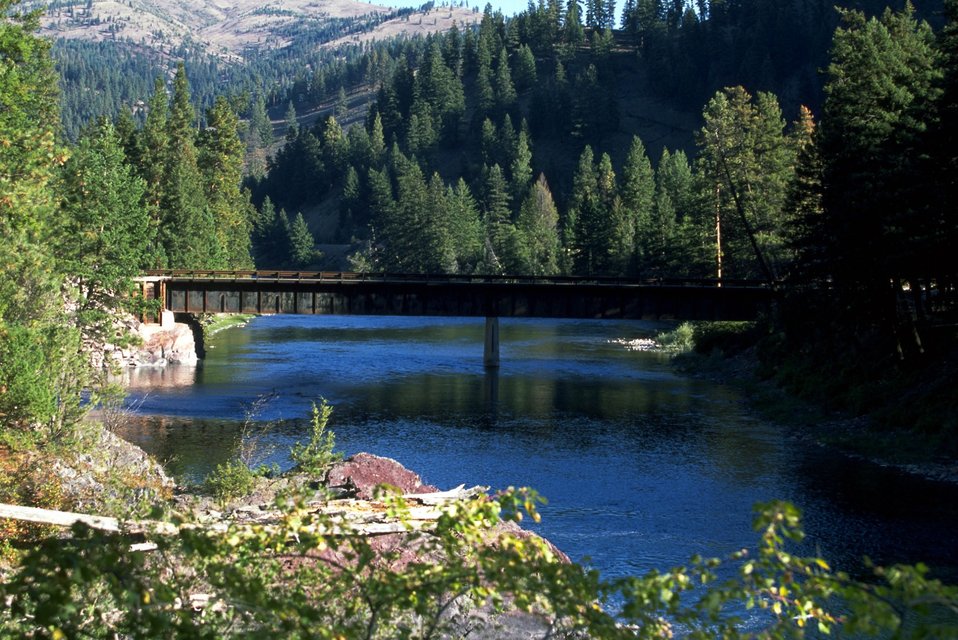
Whitaker Bridge accross the Blackfoot River